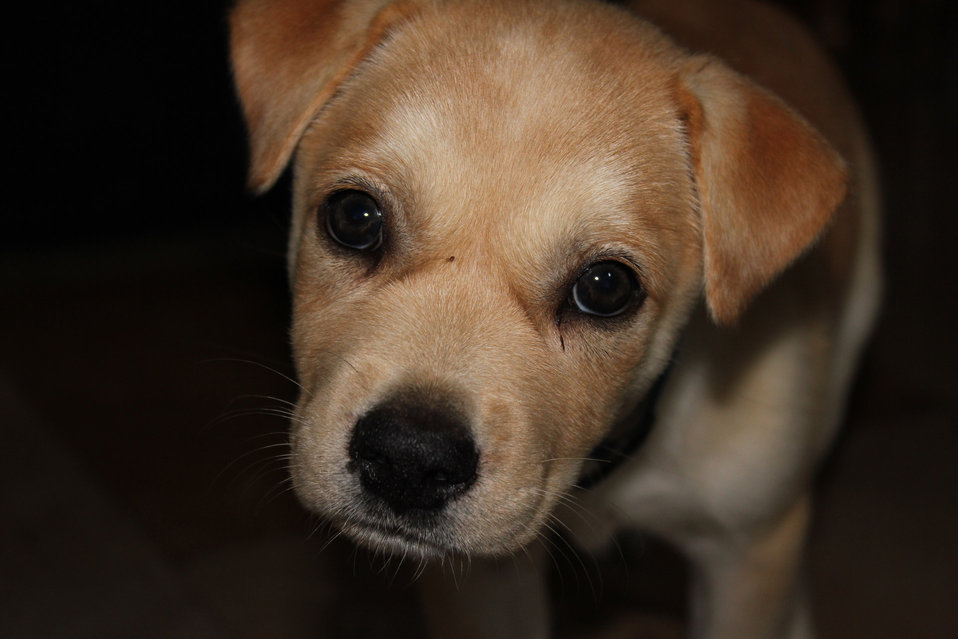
Cute puppy with sad face.